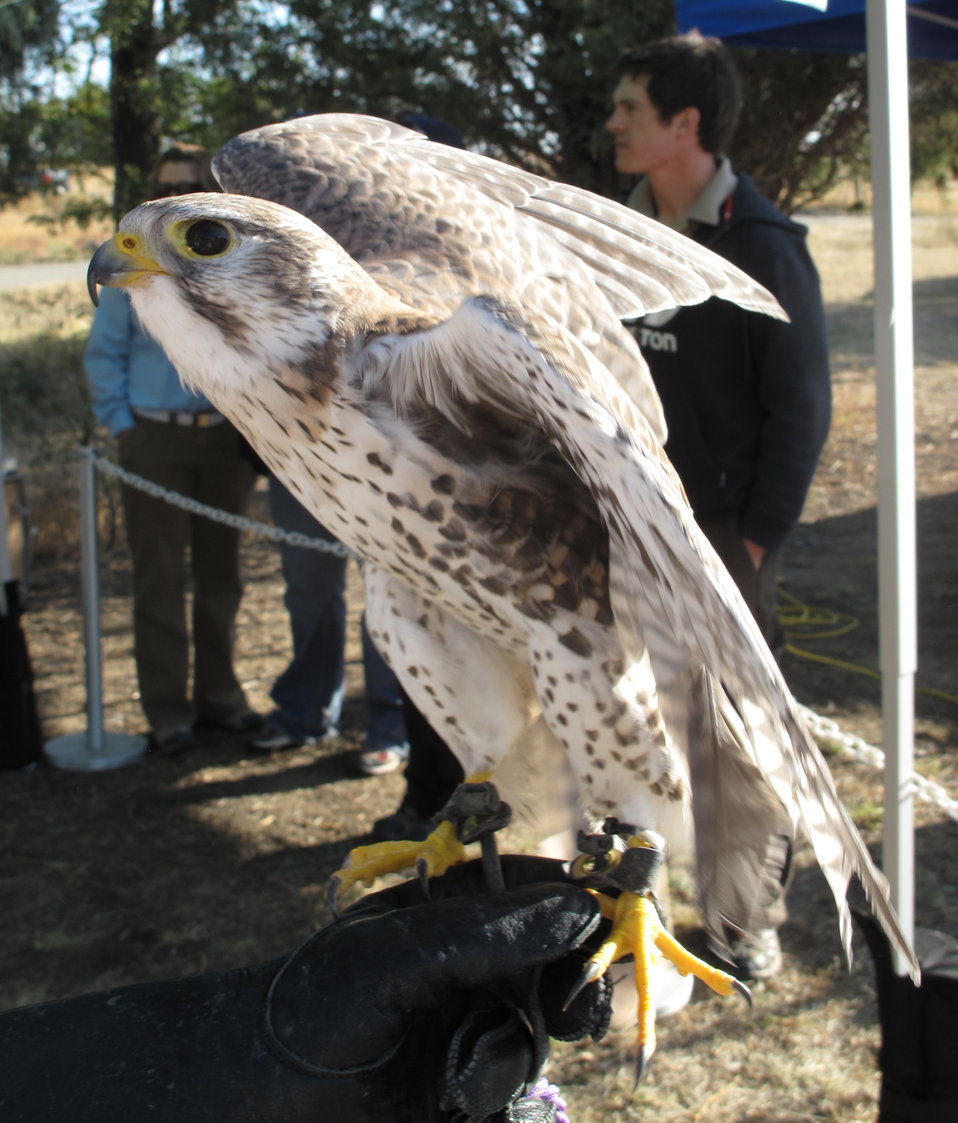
Refuge Round-Up 2010